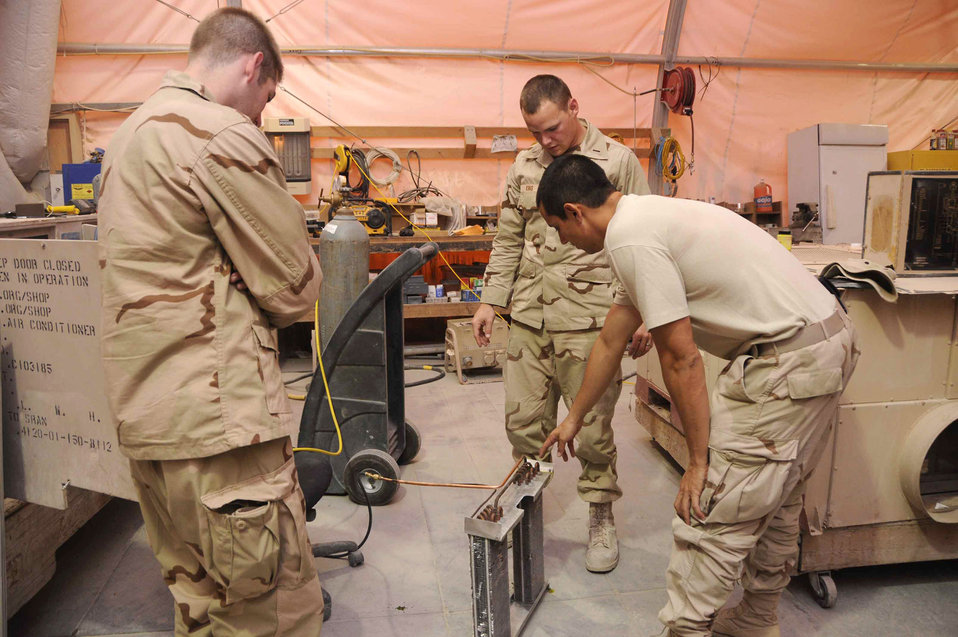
Cadets experience real-world deployment

Air Force Academy Cadet Brian Vickers and his mentor, 1st Lt. Benjamin King, visit the heating, ventilation and air conditioning repair shop June 19 at a base in Southwest Asia. The visit will give the cadet insight on tasks Airmen are responsible for in the 379th Civil Engineer Squadron. The cadets are visiting the base as part of the academy's Operation Air Force program, allowing them to experience an active-duty deployment.